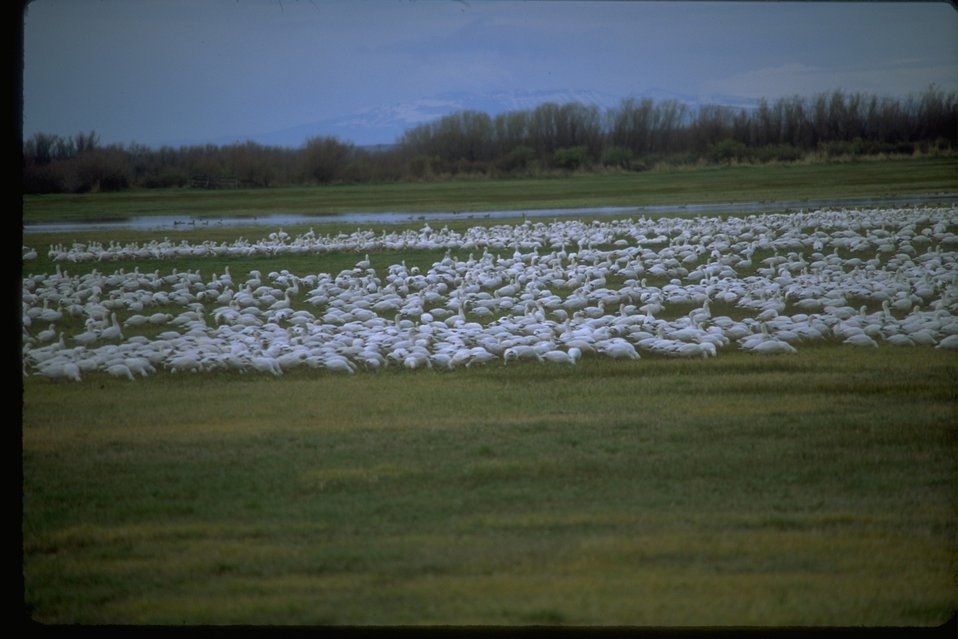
Snow Geese (Chen hyperborea) standing in large field south of Burns.